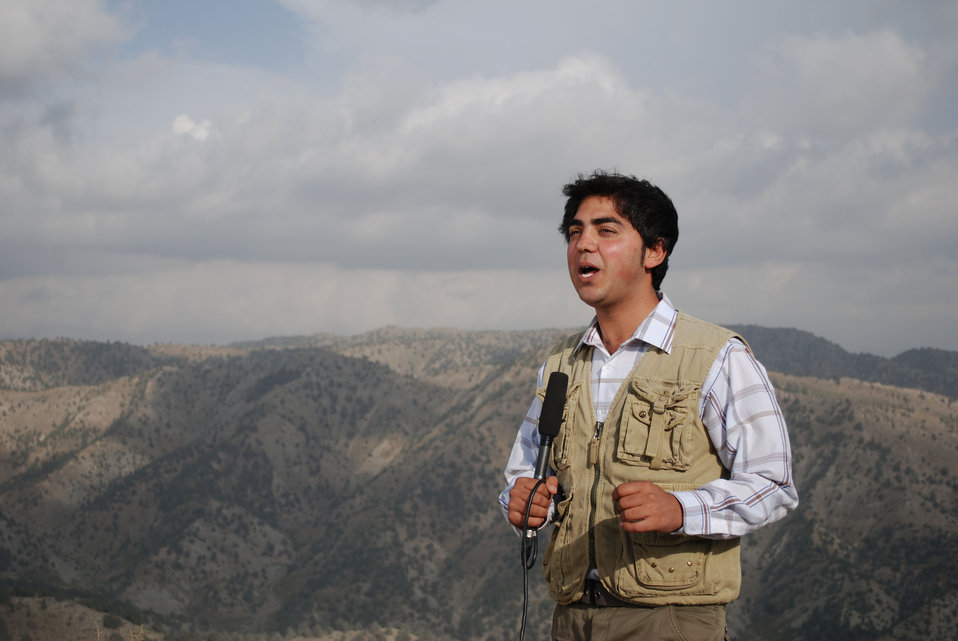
'On the Road' in Paktya Province